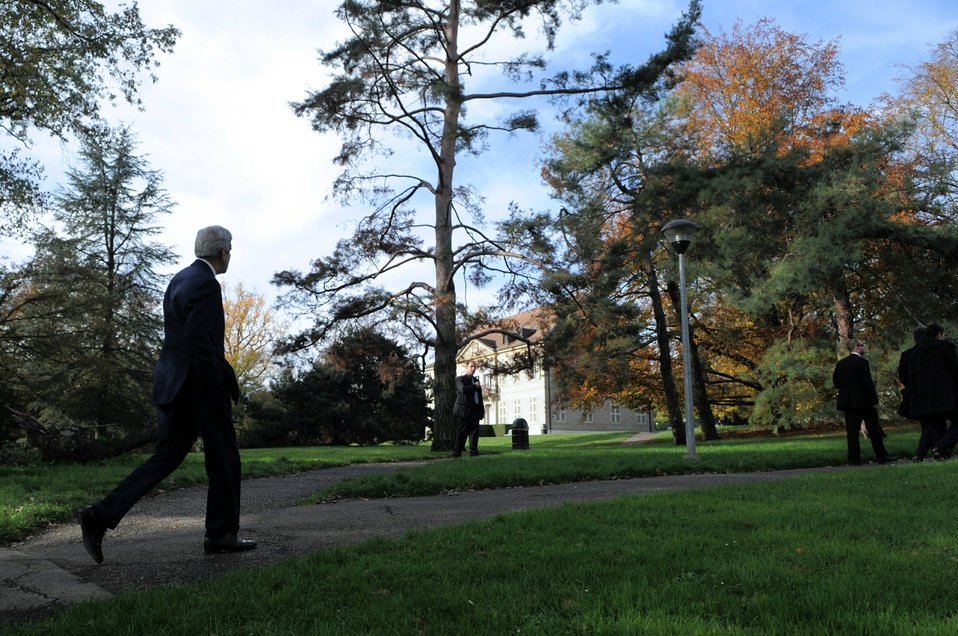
Secretary Kerry Takes a Walk in a Geneva Park

U.S. Secretary of State John Kerry takes a walk in a park between meetings in Geneva, Switzerland, on Nov.ember 8, 2013, that focused on limits on Iran's nuclear capabilities.